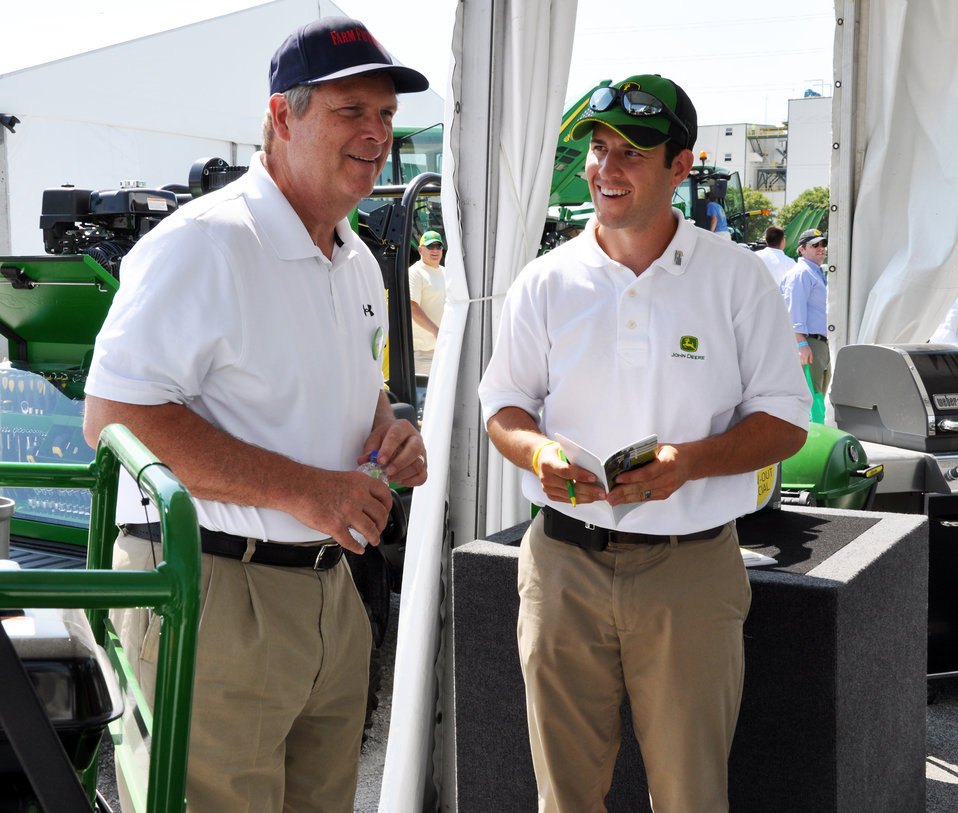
Agriculture Secretary Tom Vilsack visits with Tyler Knopp, representing John Deere, during the 2012 Farm Progress Show in Boone, Iowa, on Aug. 30, 2012.